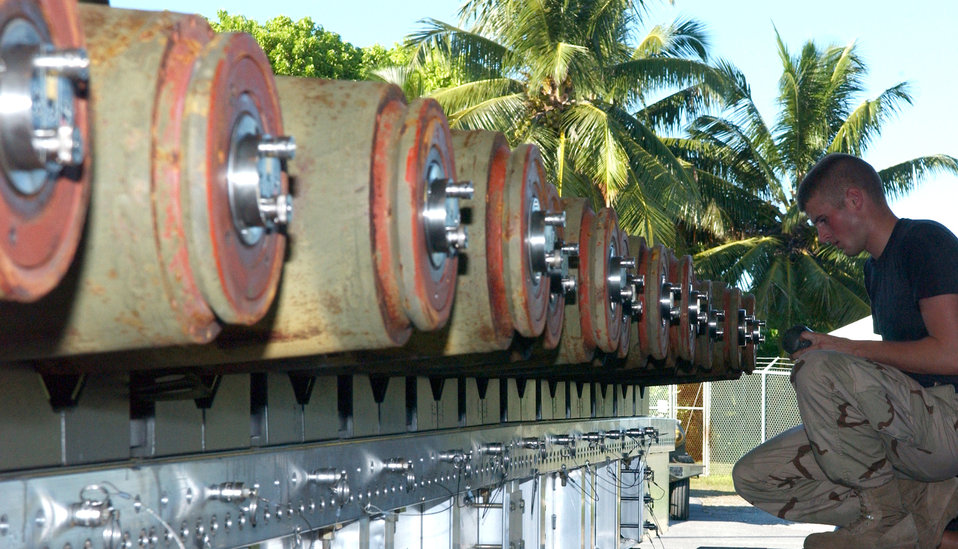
Munitions check

Airman Daniel Joyce does a fuse check on bombs at a base supporting Operating Enduring Freedom on Wednesday, May 17, 2006. The Airman, of the 40th Air Expeditionary Group, deployed here from Barksdale Air Force Base.